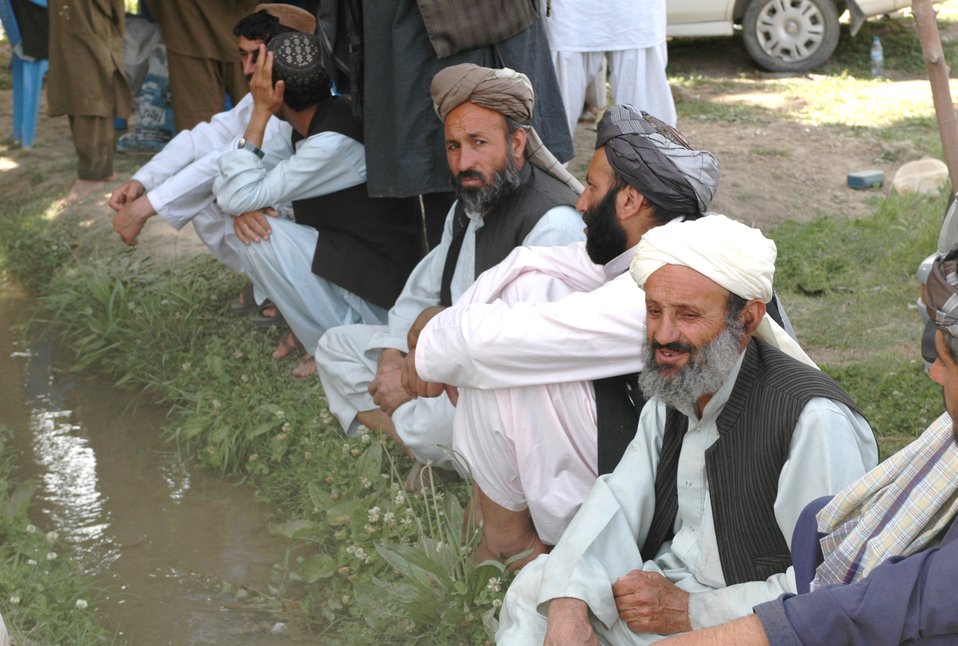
Dr Shah Visits Argandab April 10, 2010